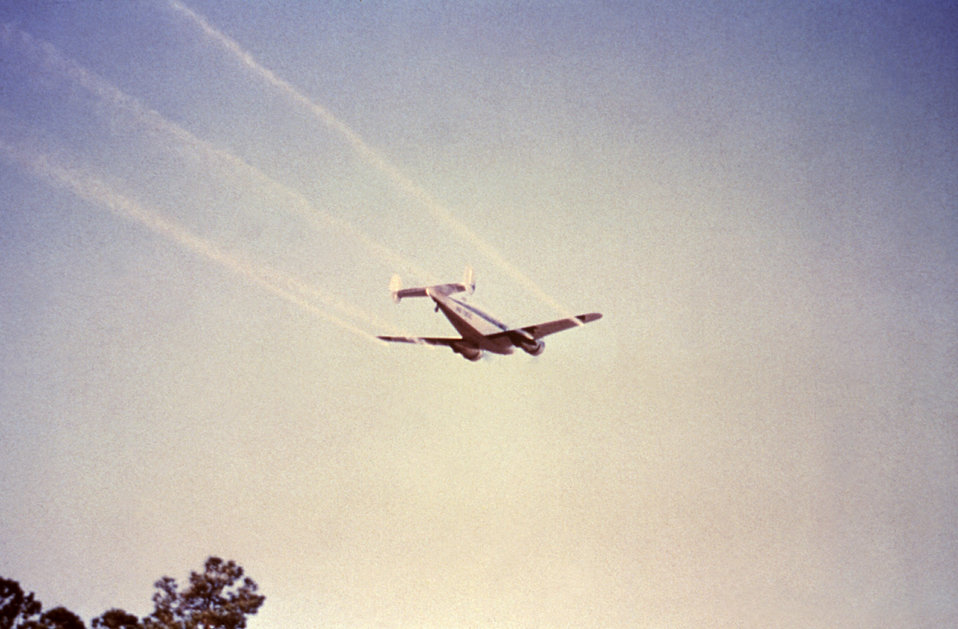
This 1981 photograph depicts a twin-engine Beechcraft dispersing its payload of ultra-low volume (ULV) insecticidal fog in order to control populations of potential insect disease vectors.